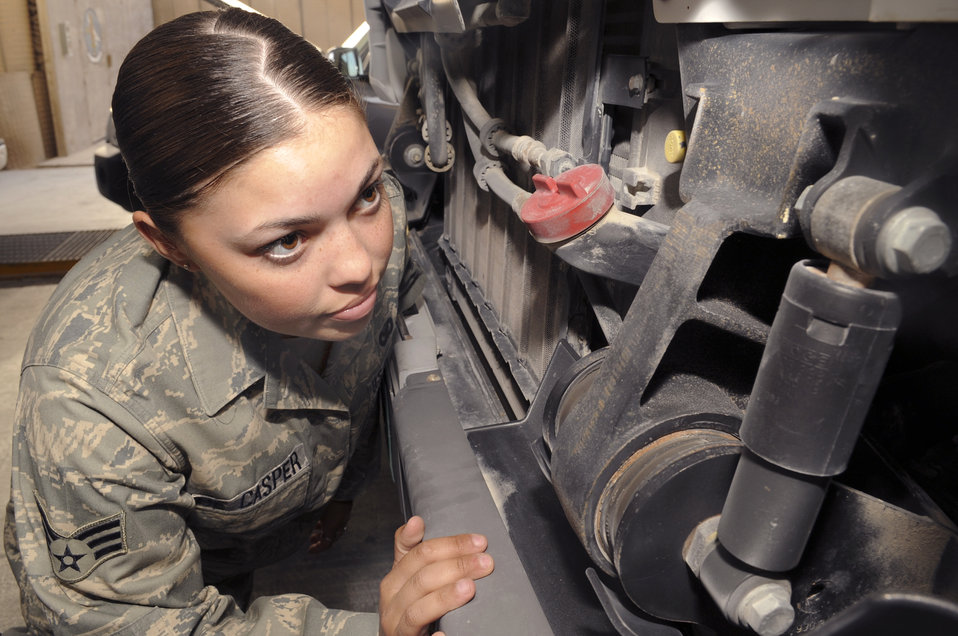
No contraband here

Senior Airman Jessica De Casper, a police officer with the 379th Expeditionary Security Forces Squadron, inspects the engine compartment of a truck March 3 before it enters an air base in Southwest Asia. Vehicles are thoroughly searched to ensure the safety of base people.